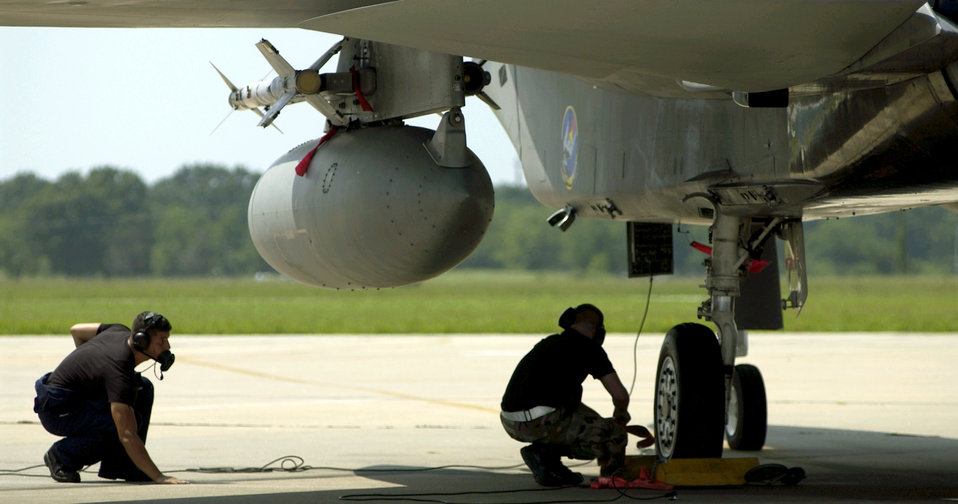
Preparing an eagle for ONE

LANGLEY AIR FORCE BASE, Va. -- Two F-15 Eagle crew chiefs from to the 71st Fighter Squadron conduct final preflight checks before a sortie July 16 supporting Operation Noble Eagle. ONE refers to U.S. military operations in direct support of homeland defense.